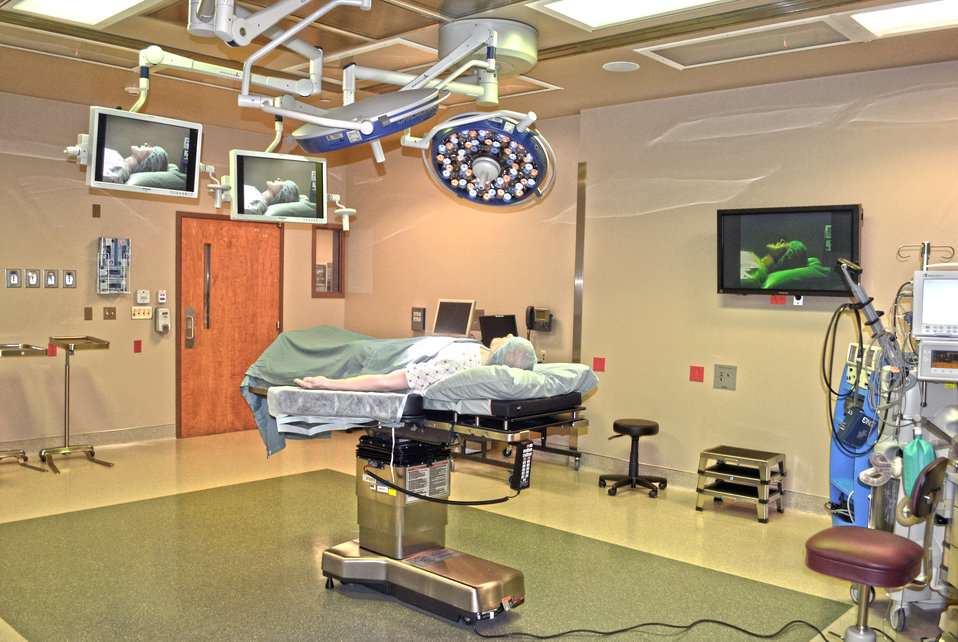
Sacramento District completes $13 million addition at VA medical facility

A mannequin lays inside one of the new operating rooms at the Grand Junction Department of Veterans Affairs Medical Center March 23, 2012, in Grand Junction, Colo. The U.S. Army Corps of Engineers Sacramento District oversaw construction of the $13 million surgery floor addition, which adds two specialty operating rooms and two general operating rooms. (U.S. Army photo illustration by Carlos J. Lazo/Released)